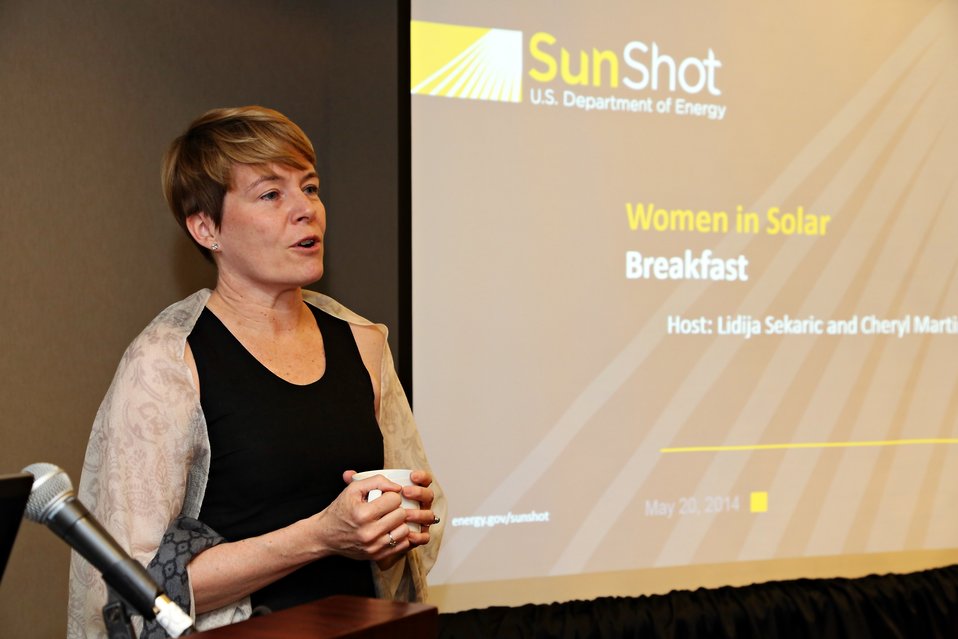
Women in Solar Breakfast 4

Dr. Cheryl Martin, Director, Advanced Research Projects Agency-Energy speaking at the Women in Solar Breakfast.